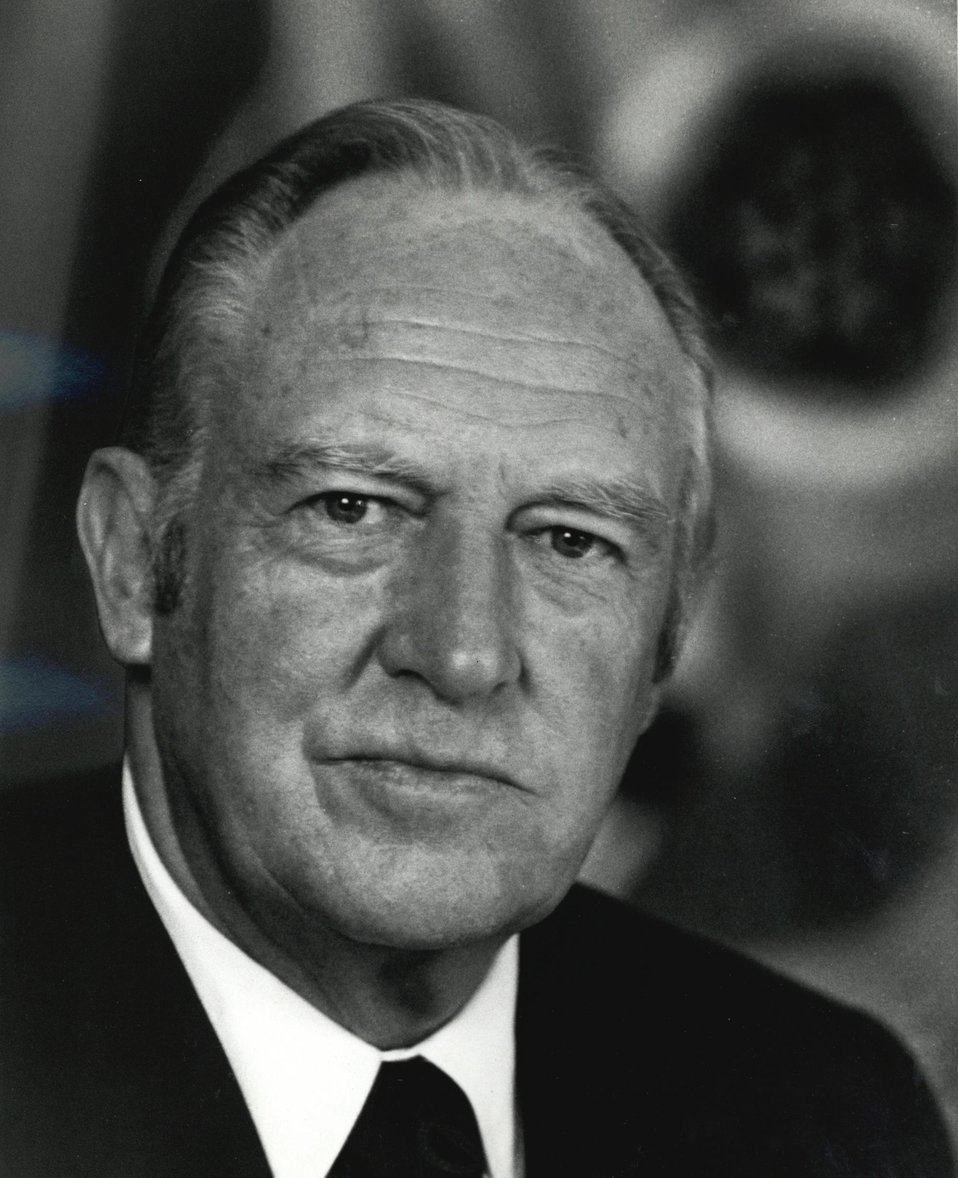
William P. Rogers, U.S. Secretary of State, January 22, 1969 to September 3, 1973